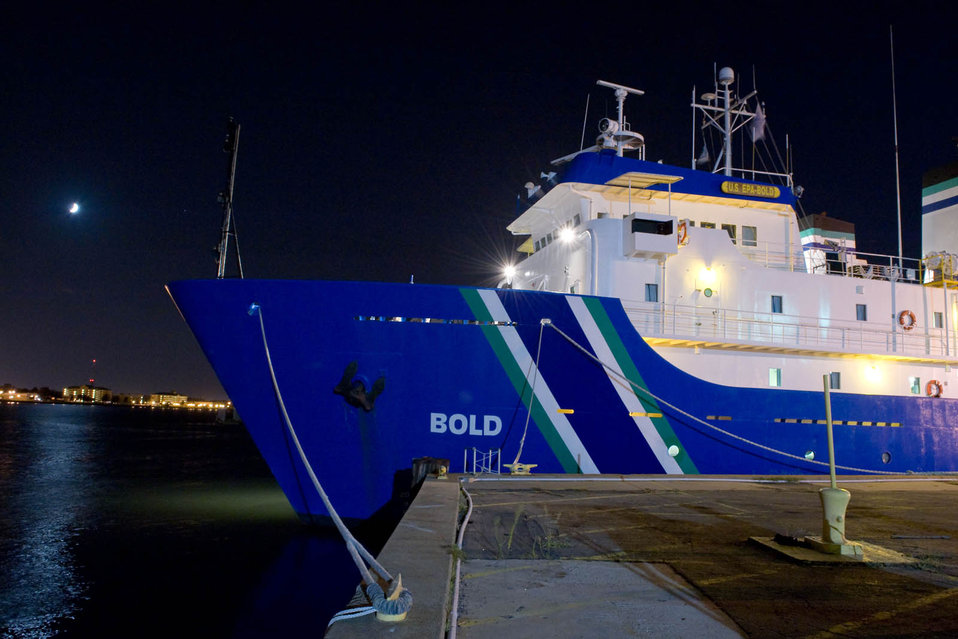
OSV Bold in Norfolk, VA.